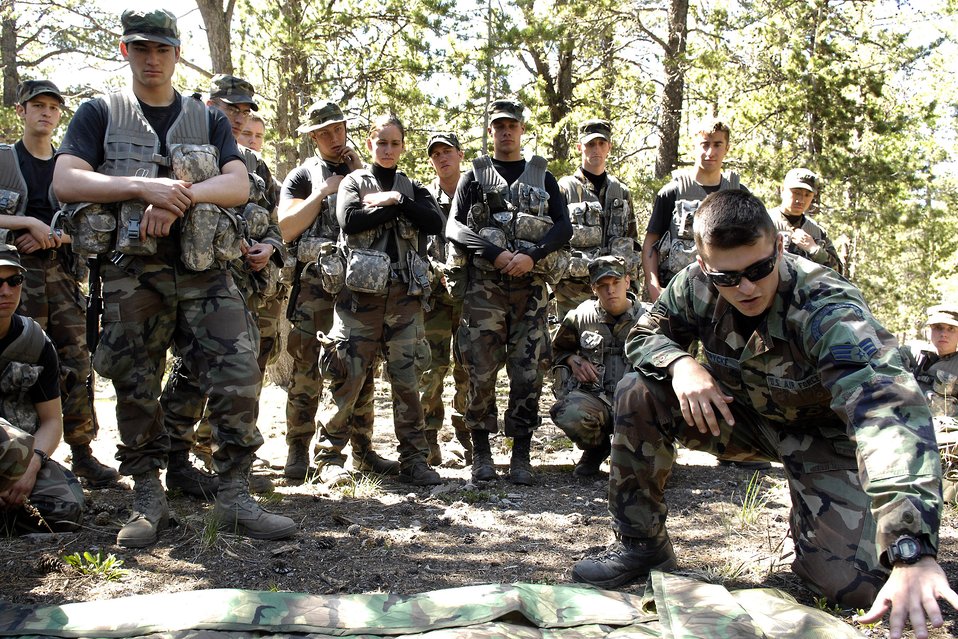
Cadets train in survival, evasion, resistance, escape

Air Force Academy cadets focus on Senior Airman Adam Derycke as he assembles an evasion pack during Combat Survival Training June 9 in Saylor Park, Colo. Airman Derycke is a survival, evasion, resistance and escape, or SERE, specialist from the 552nd Operational Support Squadron at Tinker Air Force Base, Okla.